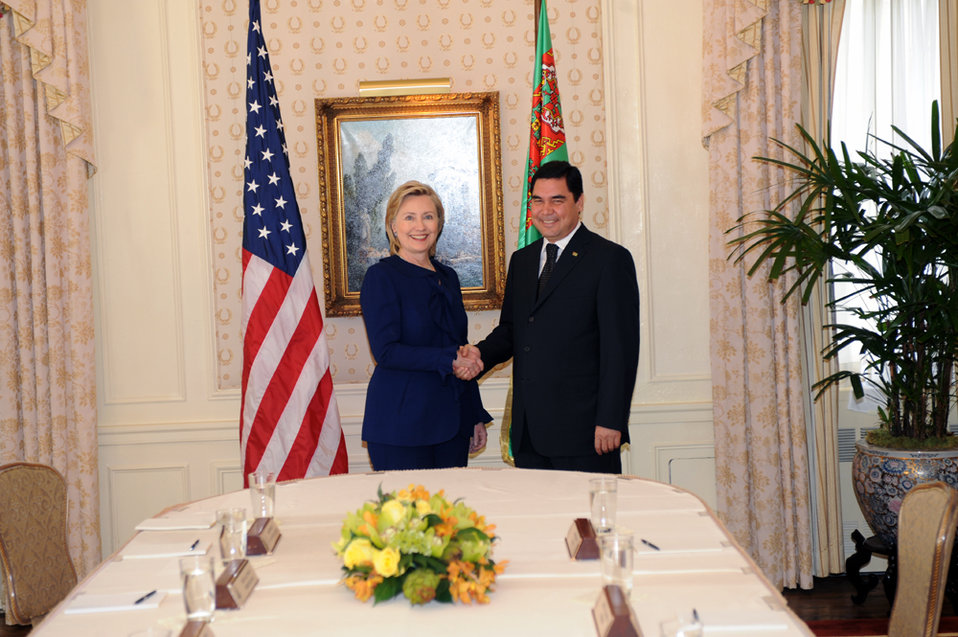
UNGA 2009: Secretary Clinton Meets With Turkmenistan President

U.S. Secretary of State Hillary Rodham Clinton meets with Turkmenistan President Gurbanguly Berdimuhamedov at the Waldorf Astoria hotel during the 64th Session of the UN General Assembly in New York City, New York September 21, 2009.